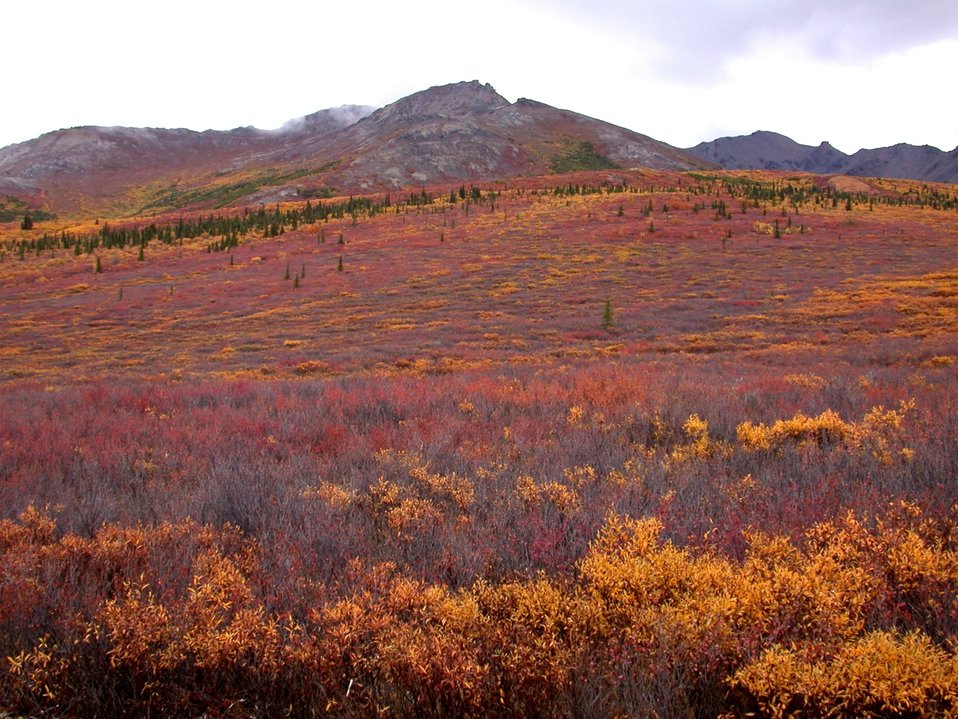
Near the tree line at higher elevations with fall colors north of Anchorage.